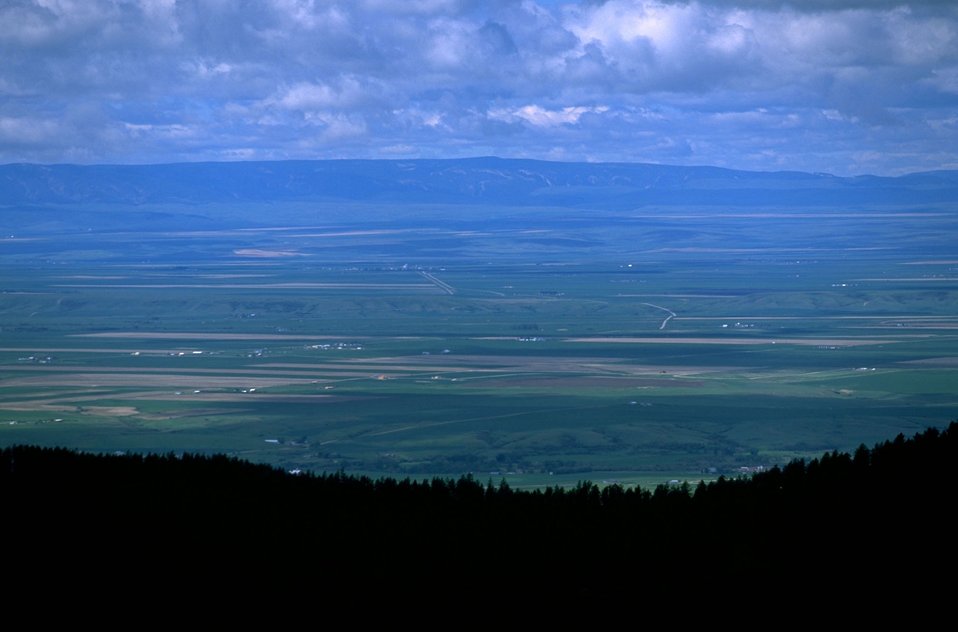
Looking over the plains in central Montana